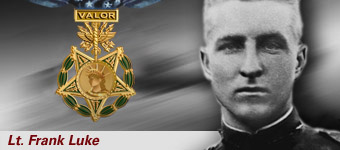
Lt. Frank Luke Jr., Medal of Honor receipient

Lt. Frank Luke Jr. was the Arizona Balloon Buster. He was presented his Medal of Honor posthumously. Luke Air Force Base, Ariz., is named in his honor.